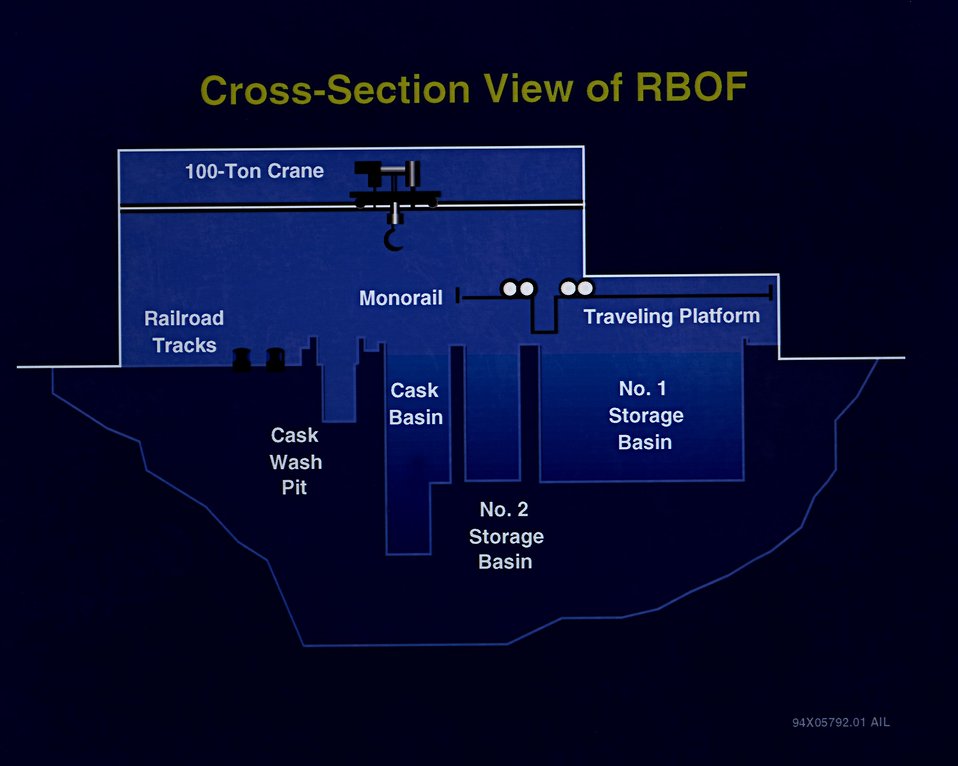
CROSS SECTION VIEW OF THE RECEIVING BASIN FOR OFFICE FUELS AT SRS.

THE RECEIVING BASIN FOR OFFSITE FUELS (RBOF) PROVIDES SAFE RECEIPT AND INTERIM STORAGE OF IRRADIATED SPENT NUCLEAR FUEL ELEMENTS FROM SRS PRODUCTION REACTORS AND FROM TEST AND RESEARCH REACTORS, DOMESTIC AND FOREIGN. SPENT FUEL ELEMENTS ARRIVE IN HEAVILY SHIELDED CASKS. ALL WORK IS DONE UNDERWATER, STARTING WITH REMOVAL OF THE ELEMENTS FROM THEIR CASKS.